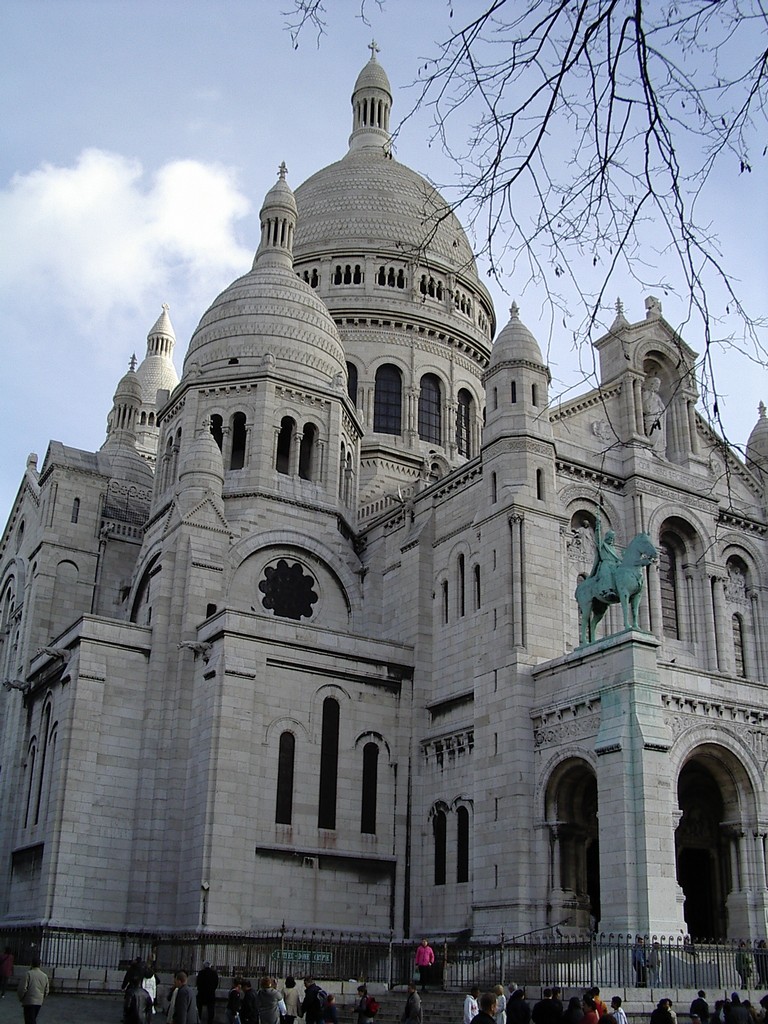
Français†: L'église du Sacré Cœur à Montmartre (Paris) Русский: Любительское фото (Париж, Базилика Святого Сердца).